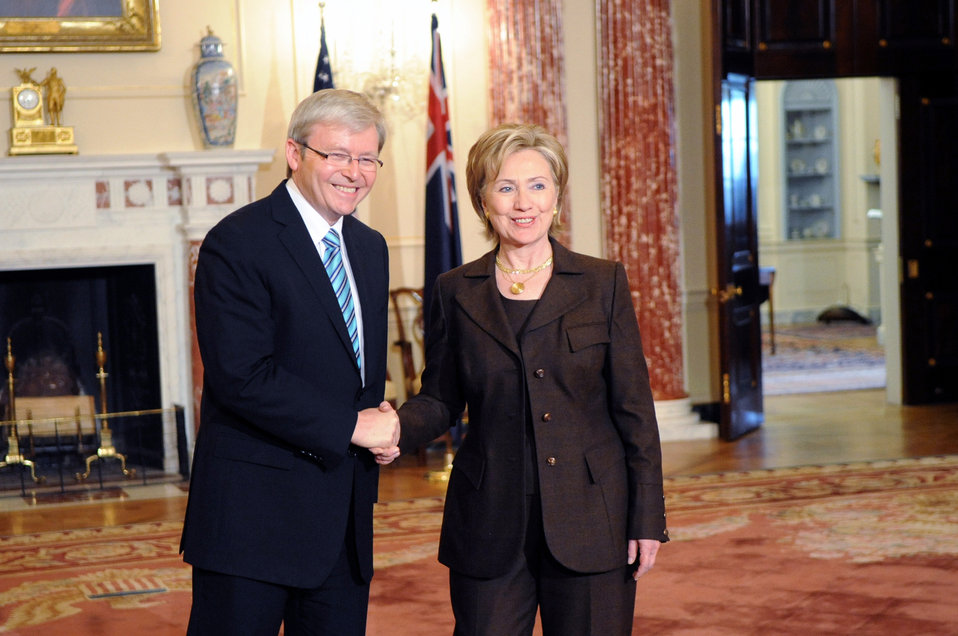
Secretary Clinton Meeting With Australian Prime Minister

U.S. Secretary of State Hillary Rodham Clinton during a meeting with Australian Prime Minister Kevin Michael Rudd in Washington, DC March 24, 2009.